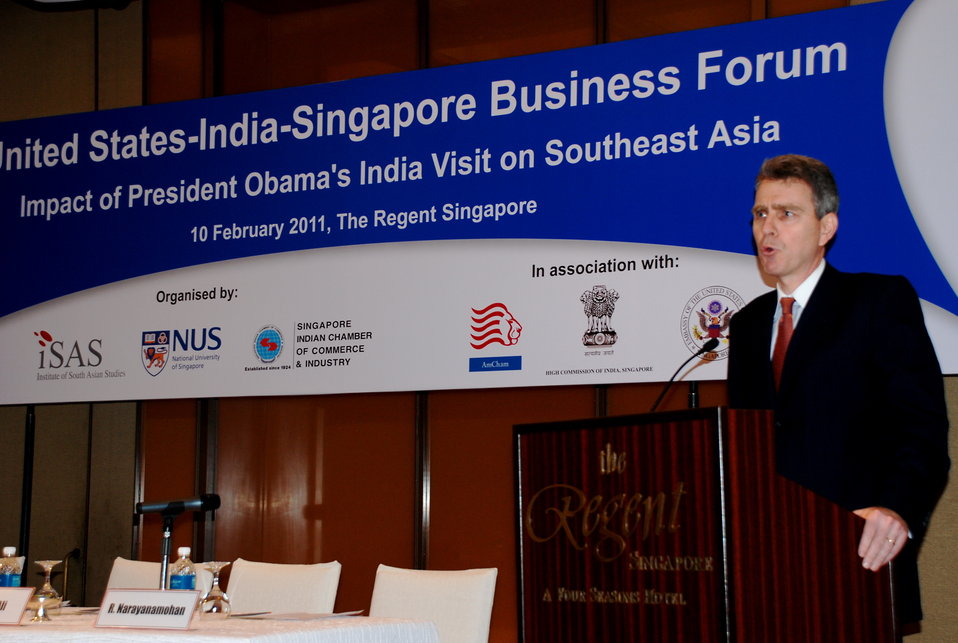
Principal Deputy Assistant Secretary Pyatt Delivers Remarks

Principal Deputy Assistant Secretary of State for South and Central Asian Affairs Geoffrey Pyatt delivers remarks at the United States-India-Singapore Business Forum in Singapore on February 12, 2011.